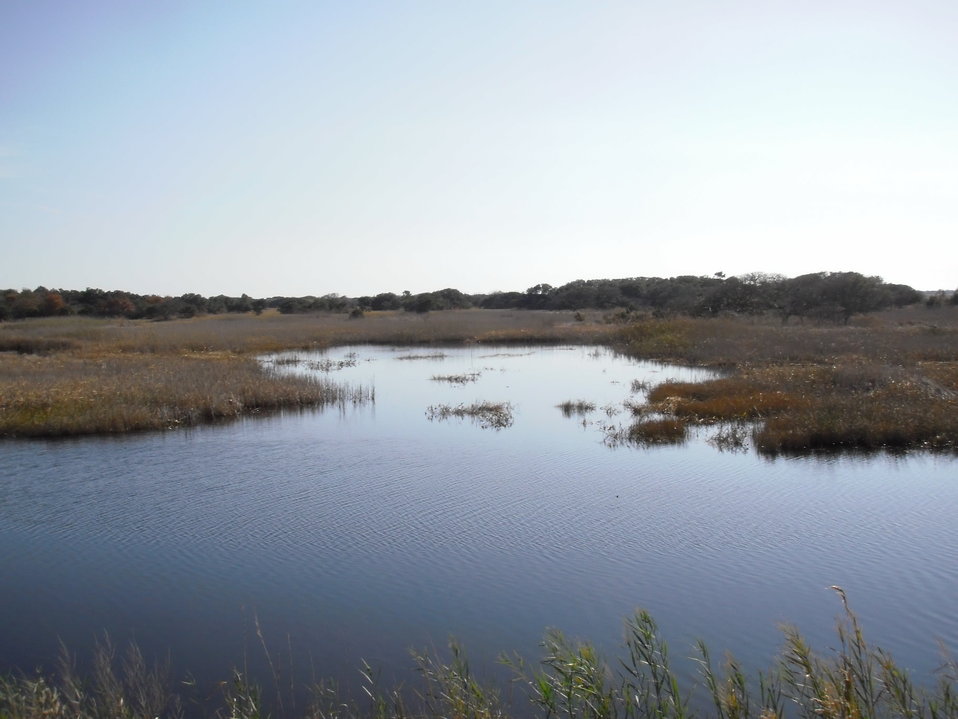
Marsh at Back Bay National Wildlife Refuge in Virginia.